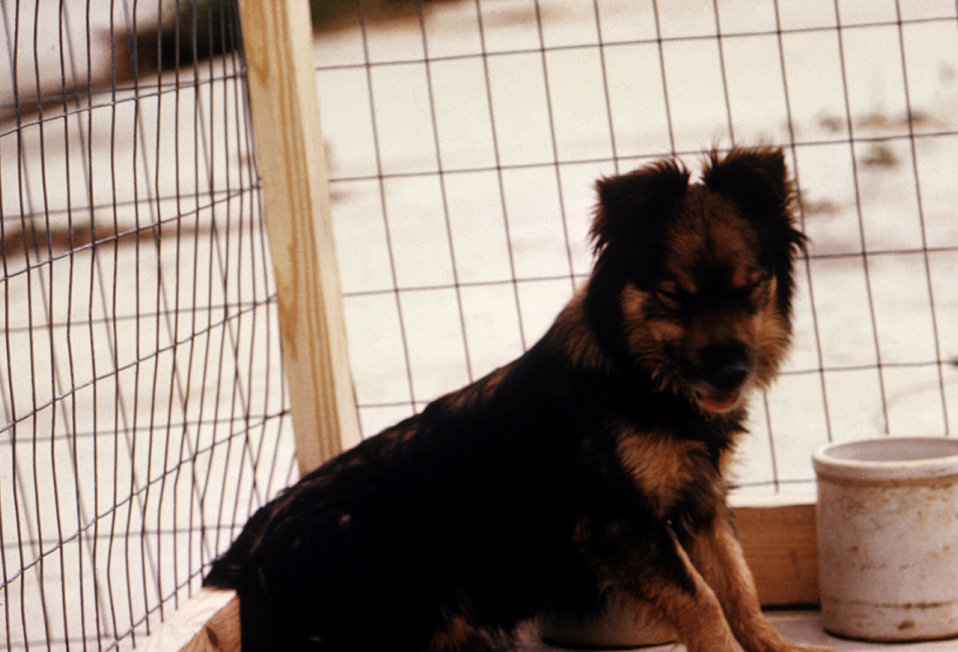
This dog is suffering from 'dumb' rabies virus, and exhibiting symptoms such as lethargy, and a need to remain isolated.